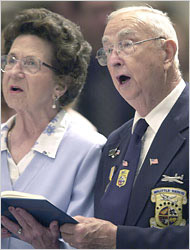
Former Doolittle Raider passes away

Former Lt. Nolan A. Herndon, shown here in 2002, died of pneumonia Oct. 8 at the age of 88. The lieutenant was a navigator-bombardier on the historic mission known as the Doolittle Raid.